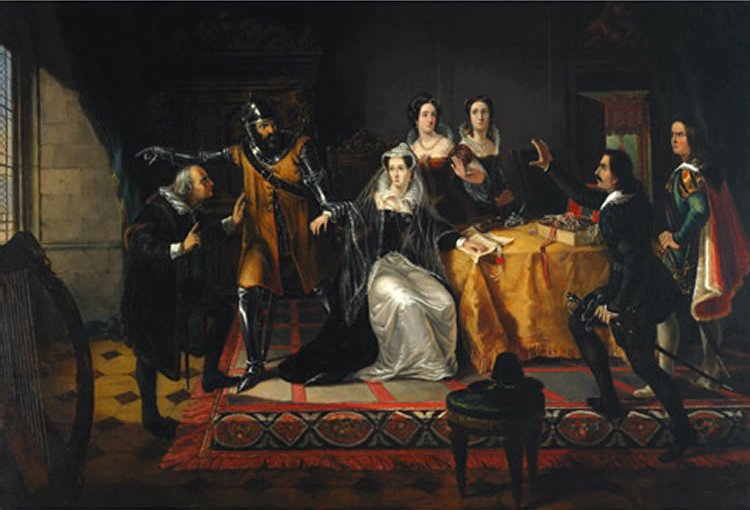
'Mary, Queen of Scots, and Entourage', oil painting by Cornelius Krieghoff, 1846